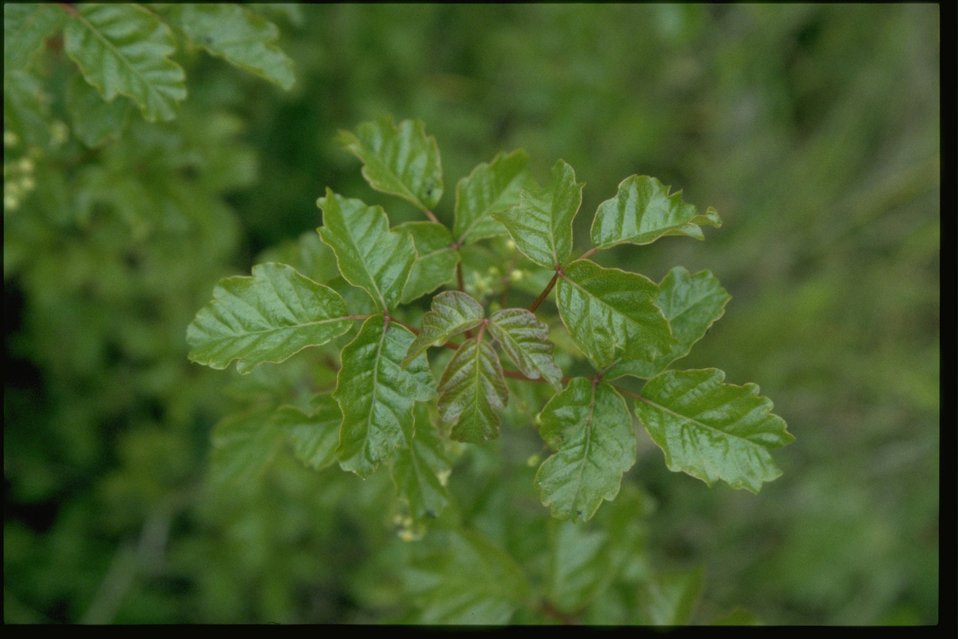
Closeup shot of Toxicodendron diversilobum.